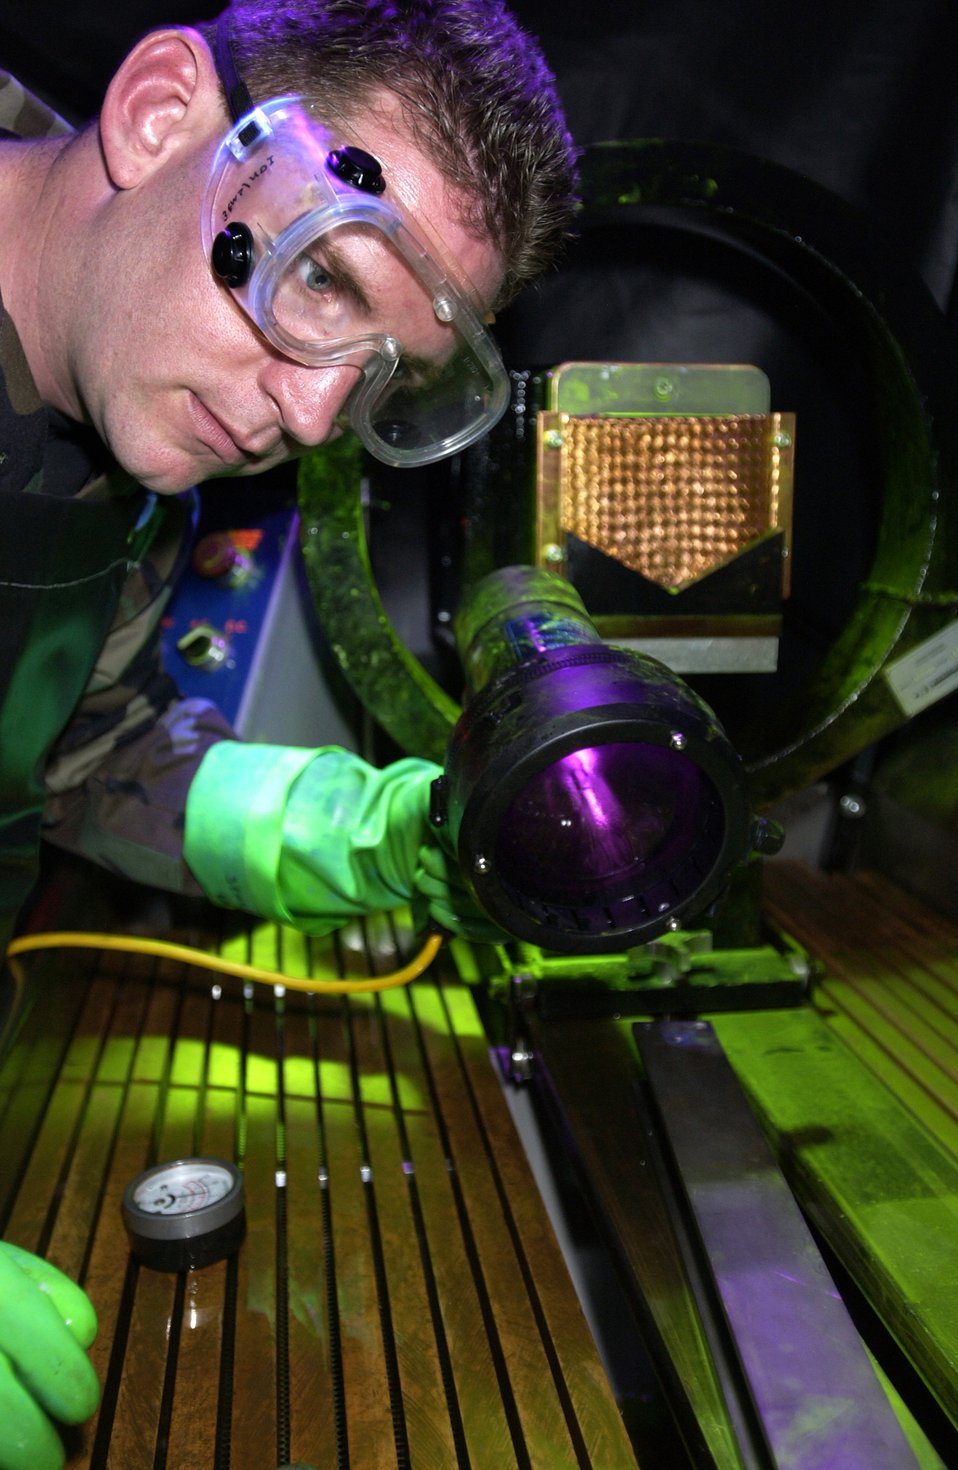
Elmendorf unit saves thousands

Tech. Sgt. Joseph Goff inspects an aircraft part for abnormalities at Elmendorf Air Force Base, Alaska. Sergeant Goff is the nondestructive inspection laboratory section chief at the 3rd Equipment Maintenance Squadron.